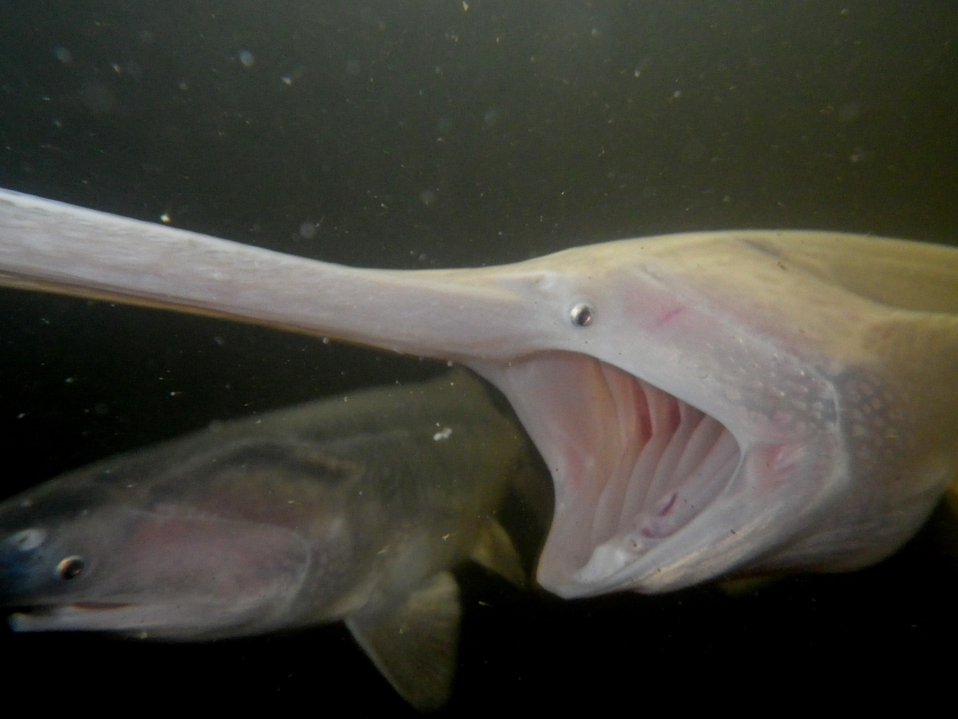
Paddlefish Juveniles

Juvenile paddlefish feeding in the hatchery's viewing tank. This albino paddlefish feeds by filtering plankton from the water similar to a whale. The American Paddlefish belongs to a relic group of fish which includes sturgeon.